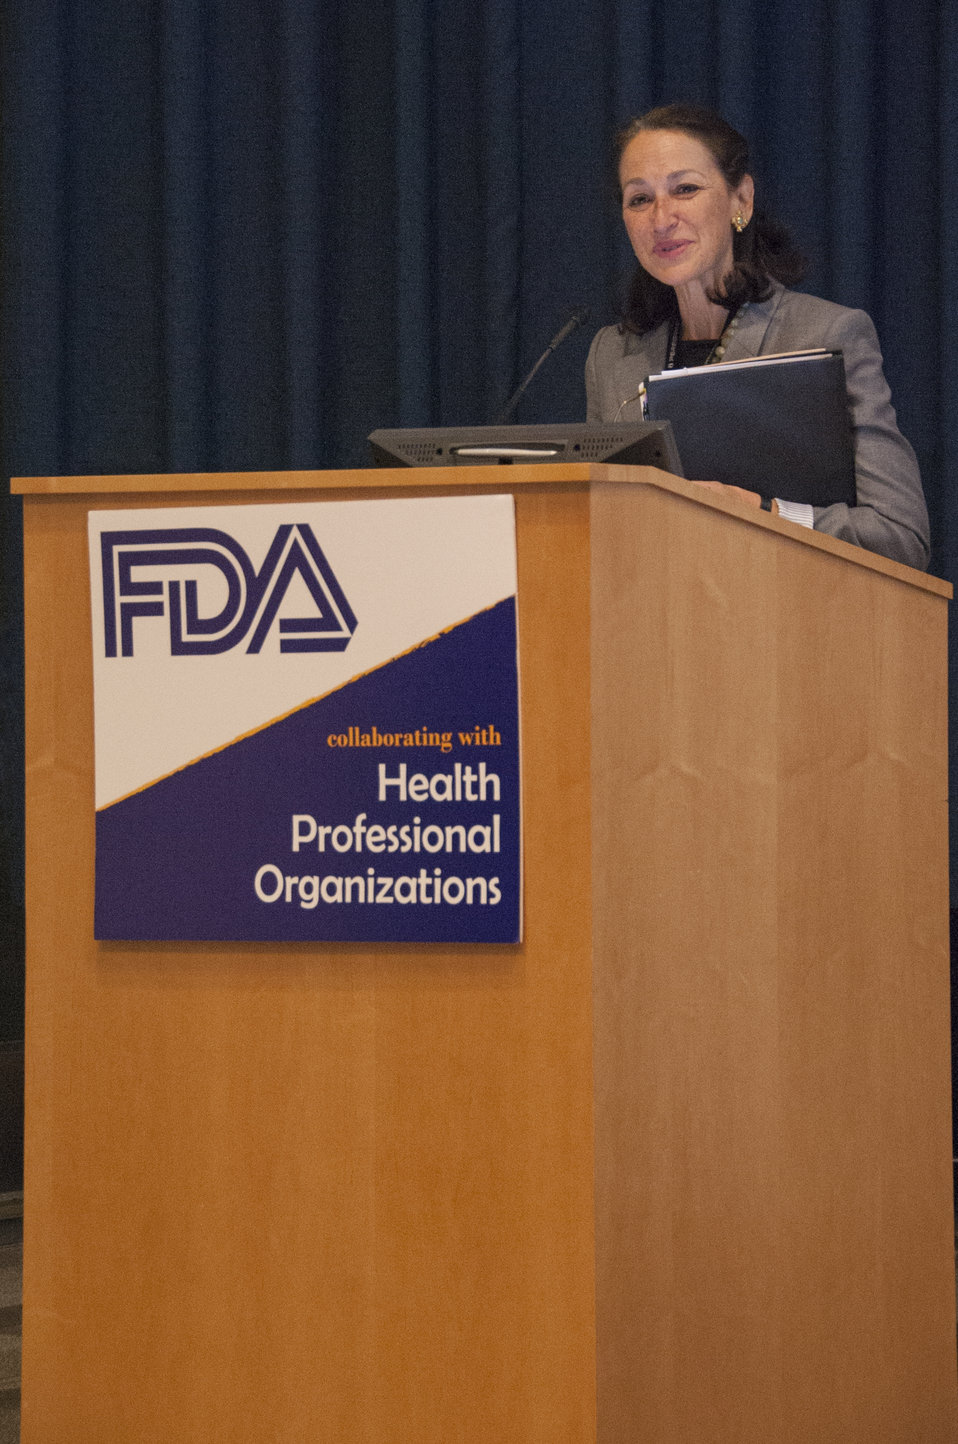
FDA's 2014 Health Professional Organizations Conference (1060)

May 14, 2014; Commissioner Margaret A. Hamburg made the introductory remarks at FDA's third annual Health Professional Organizations Conference, where some of the agency’s most senior leaders exchanged views and discussed issues of mutual interest with senior representatives from key health professional organizations. To learn more, go to FDA Voice.

This photo is free of all copyright restrictions and available for use and redistribution without permission. Credit to the U.S. Food and Drug Administration is appreciated but not required.

Privacy and use information: www.flickr.com/people/fdaphotos/